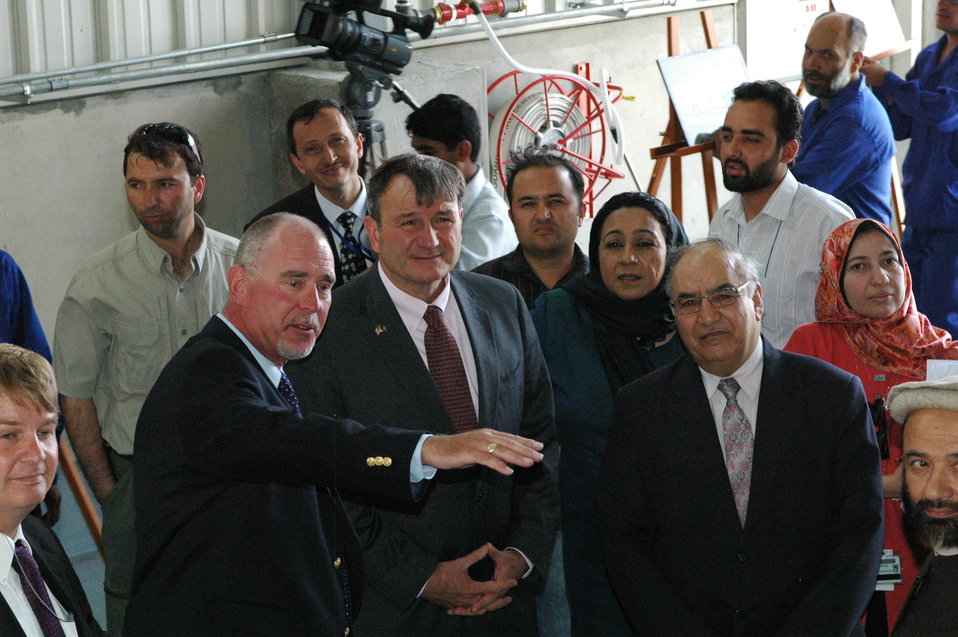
105 MW Tarakhil Power Plant Handover